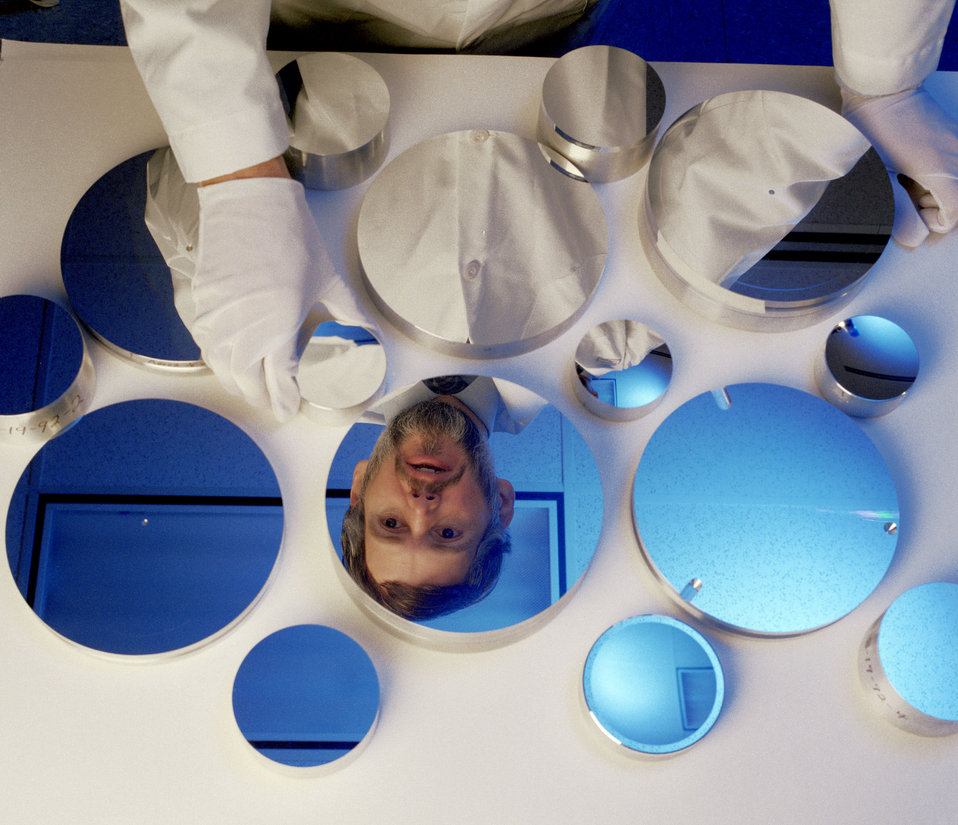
Optics Lab Y-12 Oak Ridge

93-81 DOE photo by Lynn Freeny 2-2-1993 Oak Ridge Tennessee